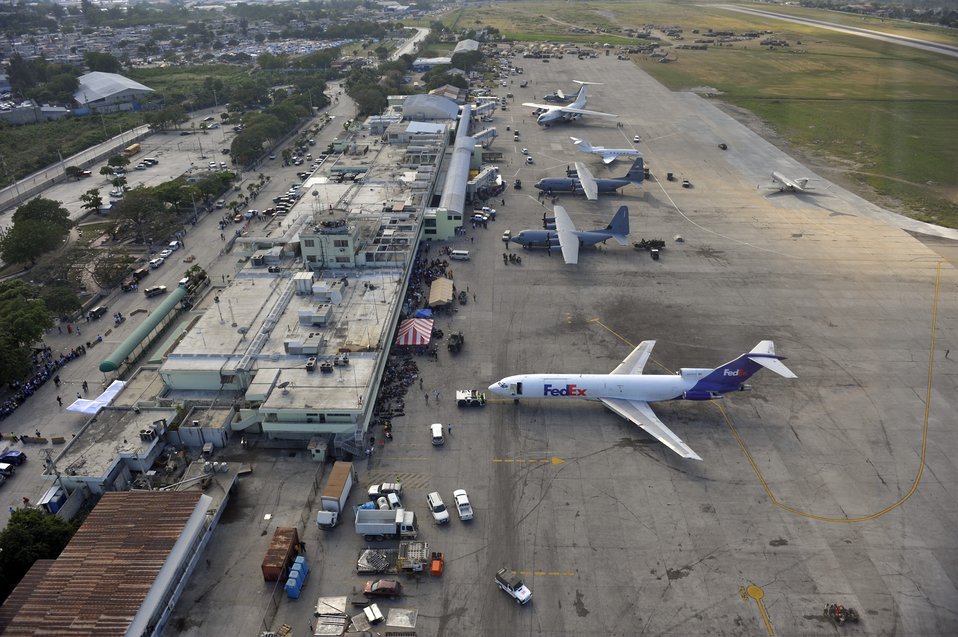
Combat controllers at work

An aerial view shows Toussaint L'Ouverture International Airport in Port-au-Prince, Haiti, Jan. 23, 2010. Aircraft from all over the world are flying in and out to drop off humanitarian aid and transport people out of the Haiti in the aftermath of the devastating earthquake that struck the country Jan. 12.